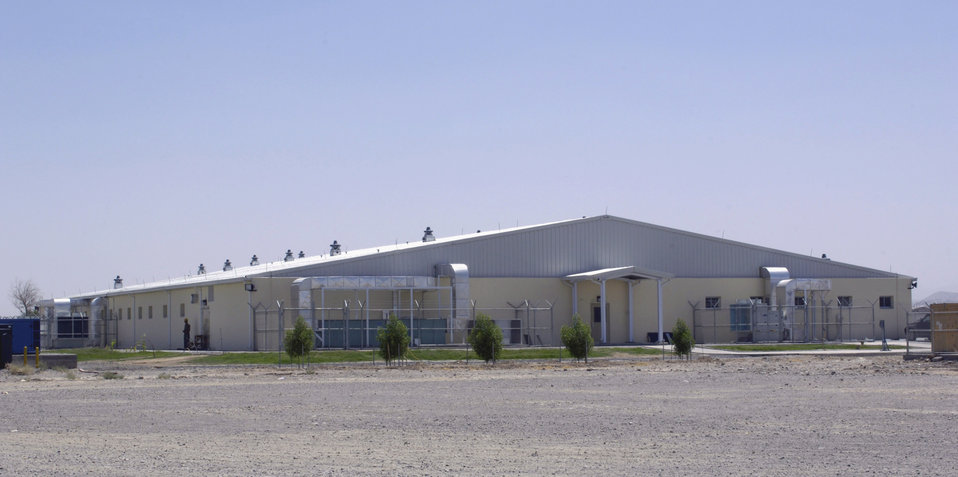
Airmen equip Afghan hospital with supplies, knowledge

Tech. Sgt. Curtis Miller assembles medical equipment in a warehouse Aug 17. Once assembled, the equipment will be transported across the street, to the newly built $6.5 million, 50-bed hospital on the Afghan National Army's Hero Camp, located just outside Kandahar Airfield in southern Afghanistan. Sergeant Miller is a medical logistics technician and Afghan National Army mentor. He is assigned to the Combined Security Transition Command-Afghanistan headquartered on Camp Eggers, Kabul, Afghanistan.